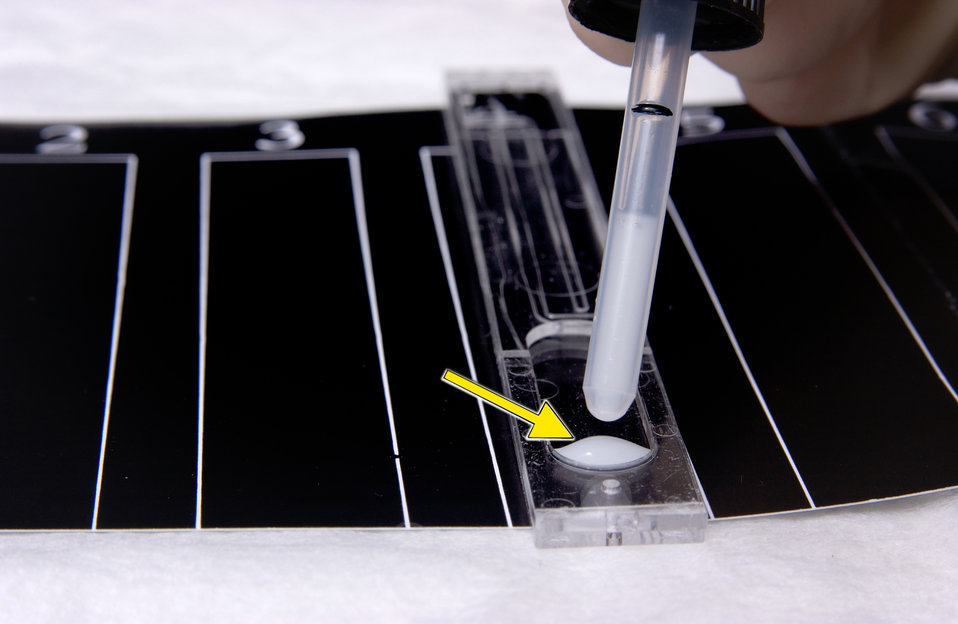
Drop CAPILLUS� HIV-1/HIV-2 Rapid Test latex reagent into the mixing well avoiding the capillary channel. (Step 6 of 12)